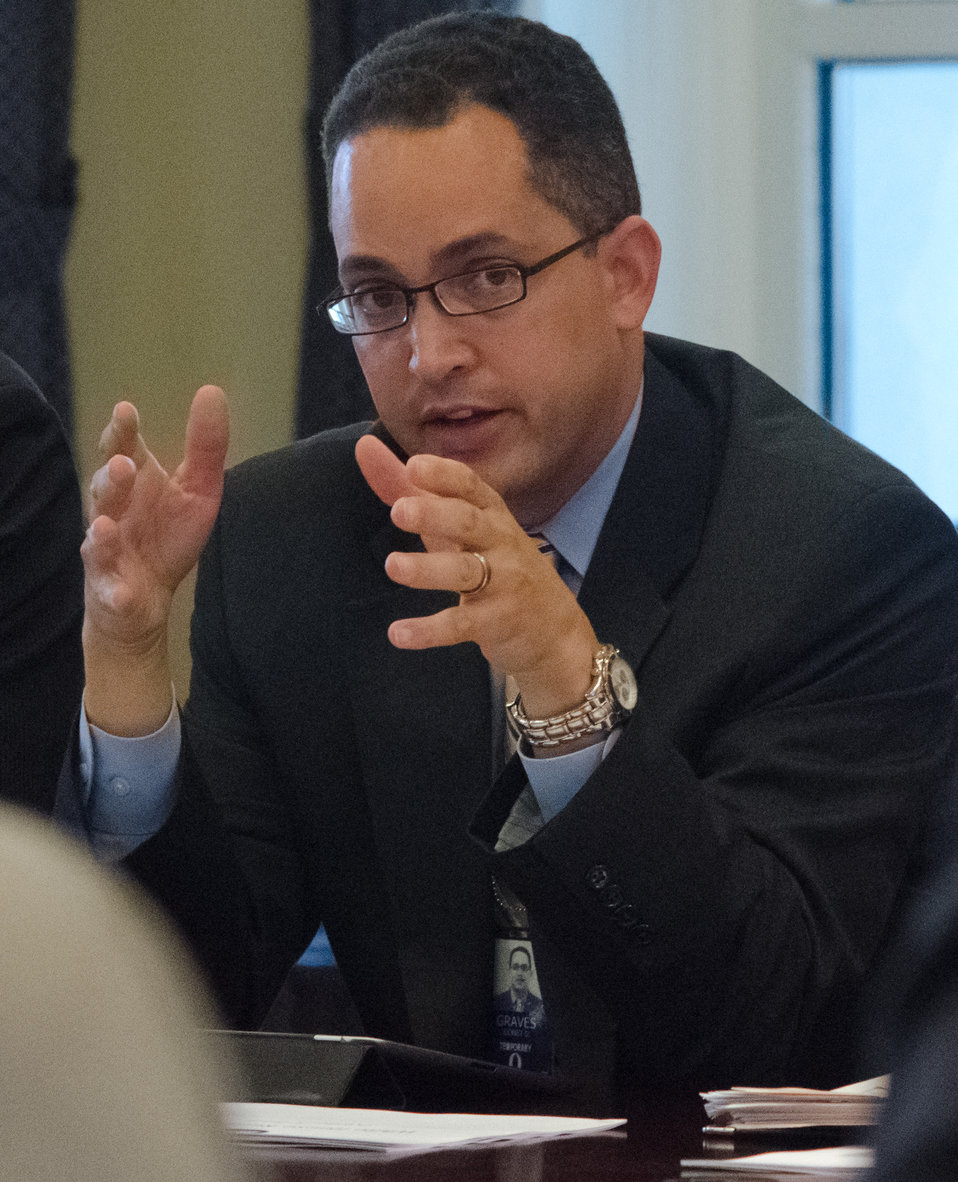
President’s Council on Jobs and Competitiveness Executive Director and U.S. Department of the Treasury Community Development and Housing Policy for Small Business Deputy Assistant Secretary Don Graves speaks during the White House Rural Council chaired by Agriculture Secretary Tom Vilsack at the White House in Washington, D.C. on Friday, Oct. 5, 2012. The White House Rural Council discusses recent White House announcements and Secretary Vilsack asked council members to outline their work plan for the coming months.